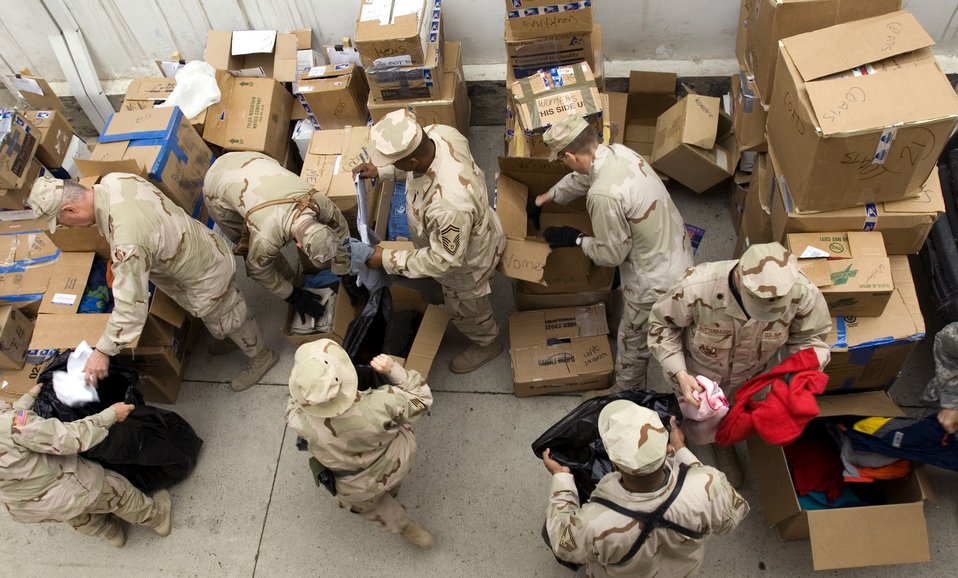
Joint forces volunteers donate time, goods

Department of Defense civilians and coalition servicemembers banded together March 16 to sort bags of clothes, toys, and shoes to donate to approximately 1,000 local Afghans at a refugee camp in Dar Ul Aman in support of the volunteer community reach program. The program volunteers provide this service every month thanks to the donated items received from U.S. citizens.